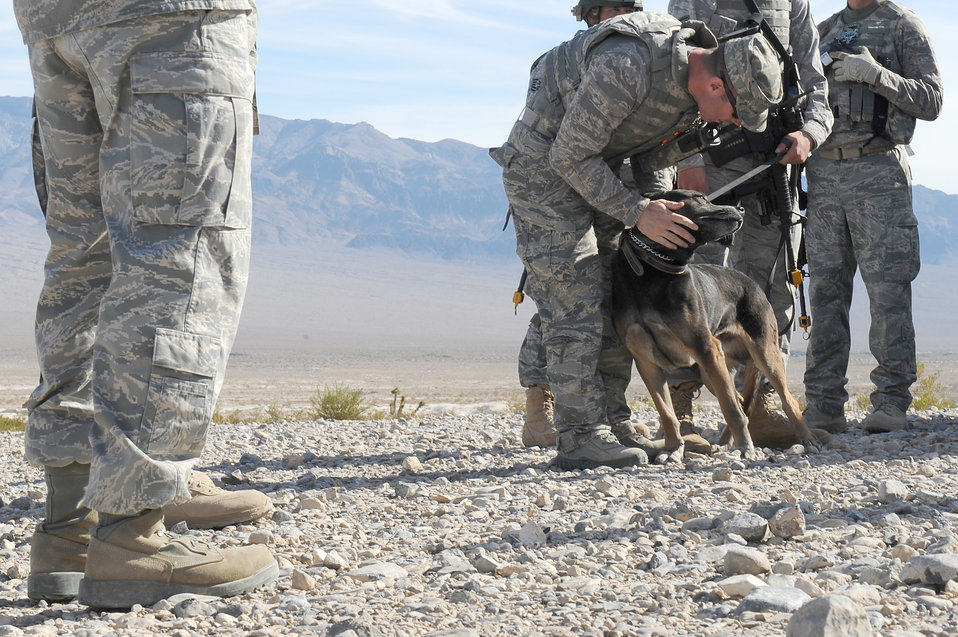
Nellis AFB selected to host new joint MWD training program

Military working dog Bico gets some encouragement from a dog handler before starting a training exercise Oct. 29, 2010, at the Nevada Test and Training Range. The training exercise is part of a new Nellis Air Force Base, Nev., program created to condense the current 80 day training curriculum for handlers and MWDs.